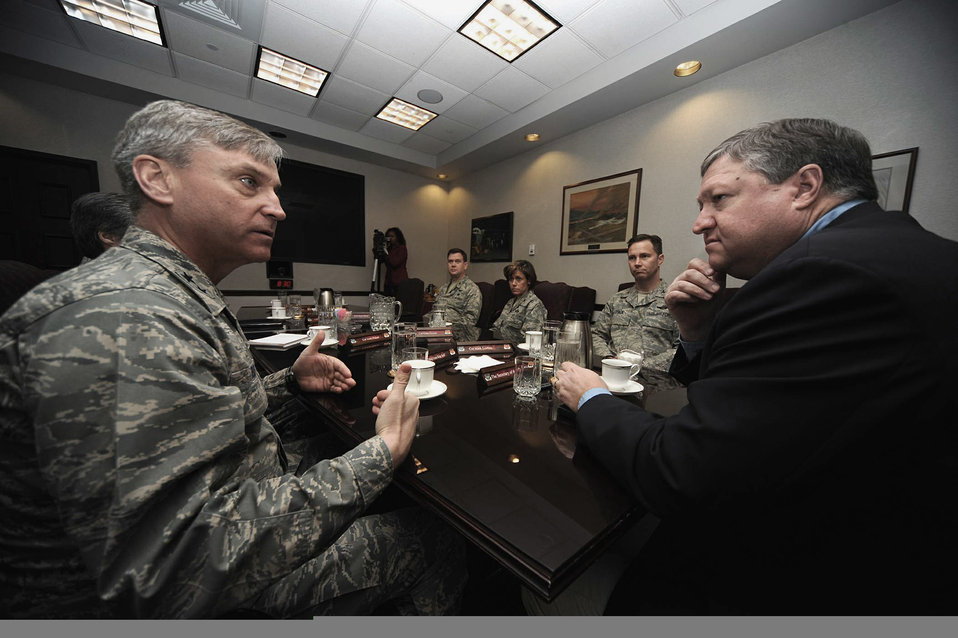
SECAF visits USAFEC

Maj. Gen. Kip Self, U.S. Air Force Expeditionary Center commander, talks with Secretary of the Air Force Michael Donley March 31 during a visit to the center on Fort Dix, N.J. Secretary Donley was visiting the Expeditionary Center to see its facilities and training venues. Besides Fort Dix, Secretary Donley visited neighboring McGuire Air Force Base and Naval Air Engineering Station Lakehurst to learn more about the Joint-Basing Initiative.